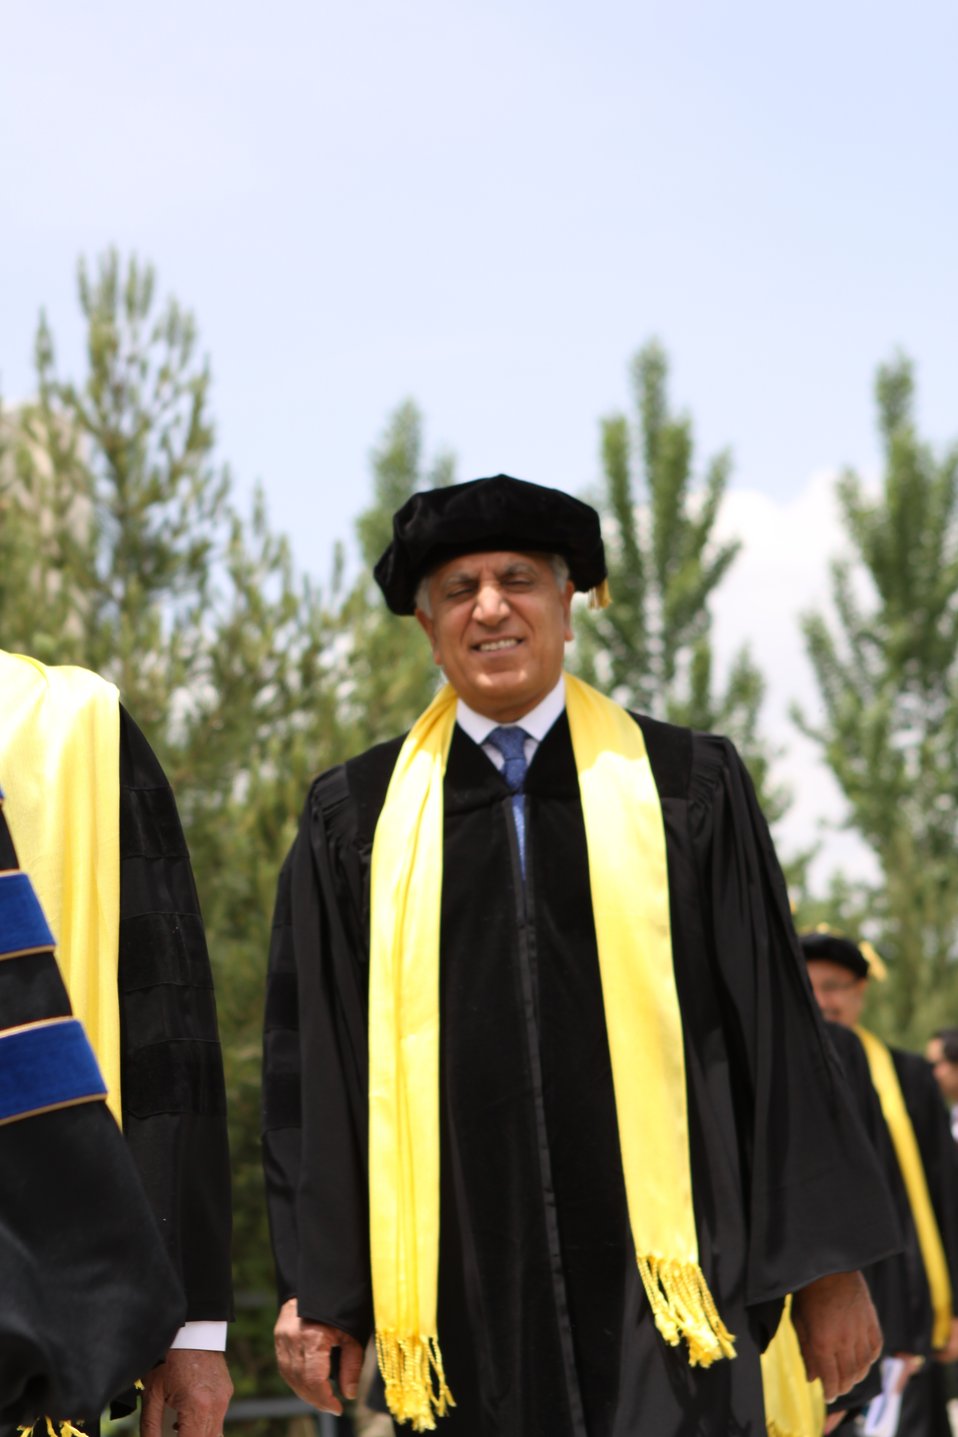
100526 AUAF Graduation 094